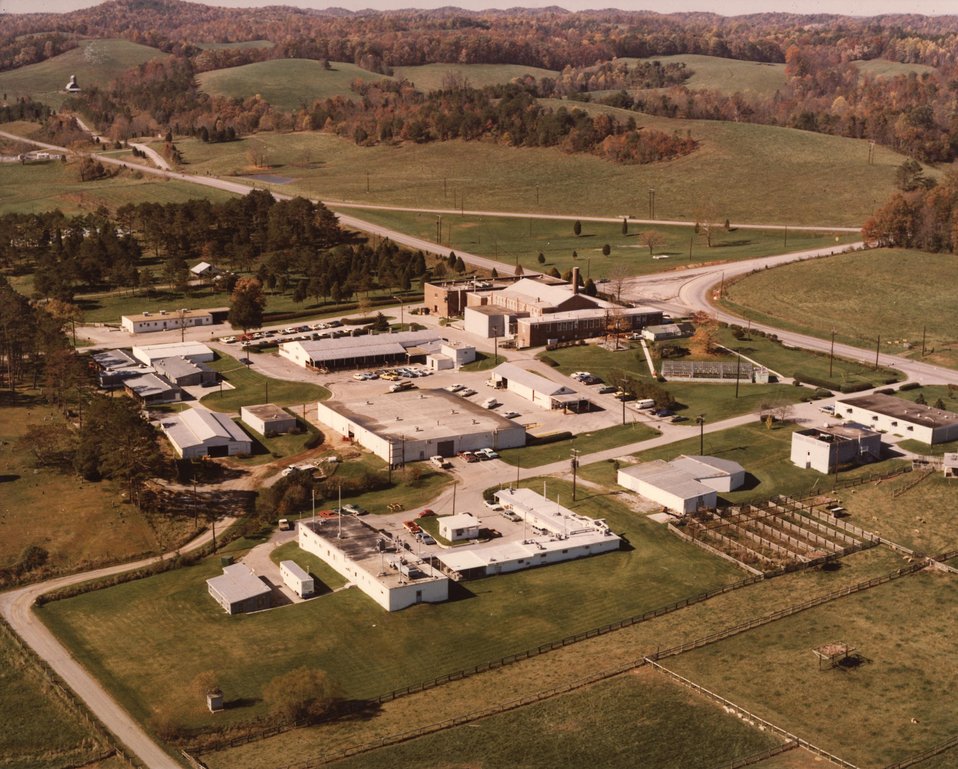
The Comparative Animal Research Laboratory (CARL) is operated for the Energy Research and Development Administration by the University of Tennessee. c. 1975